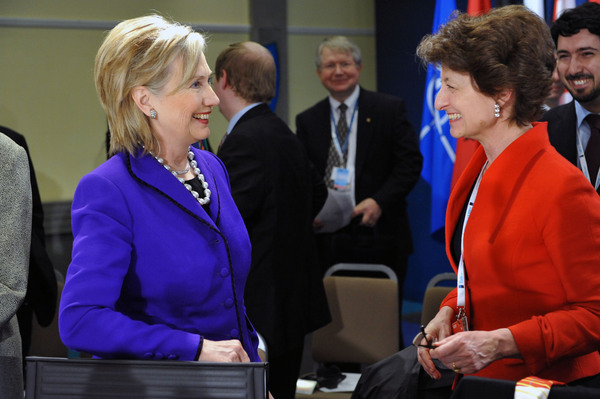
Secretary Clinton Speaks With Deputy Director Claude-Rance Arnould

U.S. Secretary of State Hillary Rodham speaks with Claude-France Arnould, Deputy Director, EU Crisis Management and Planning Directorate, at the NATO Foreign Ministers Meeting in Tallinn, Estonia, April 22, 2010.